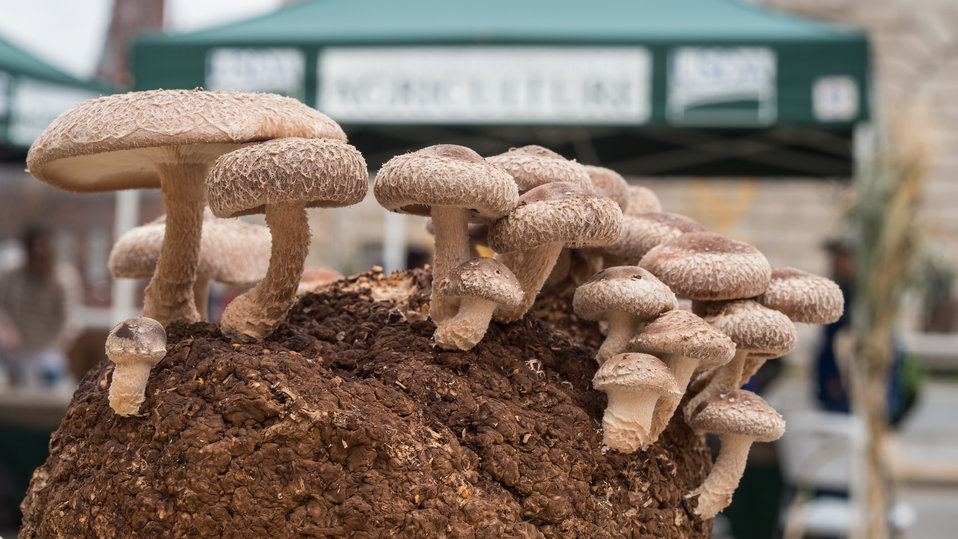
Shitake mushrooms growing on sawdust and cereal log, on display at the U.S. Department of Agriculture (USDA) farmers markets and Harvest Festival at the USDA Whitten Building east parking lot in Washington, DC, on Friday, November 22, 2013.